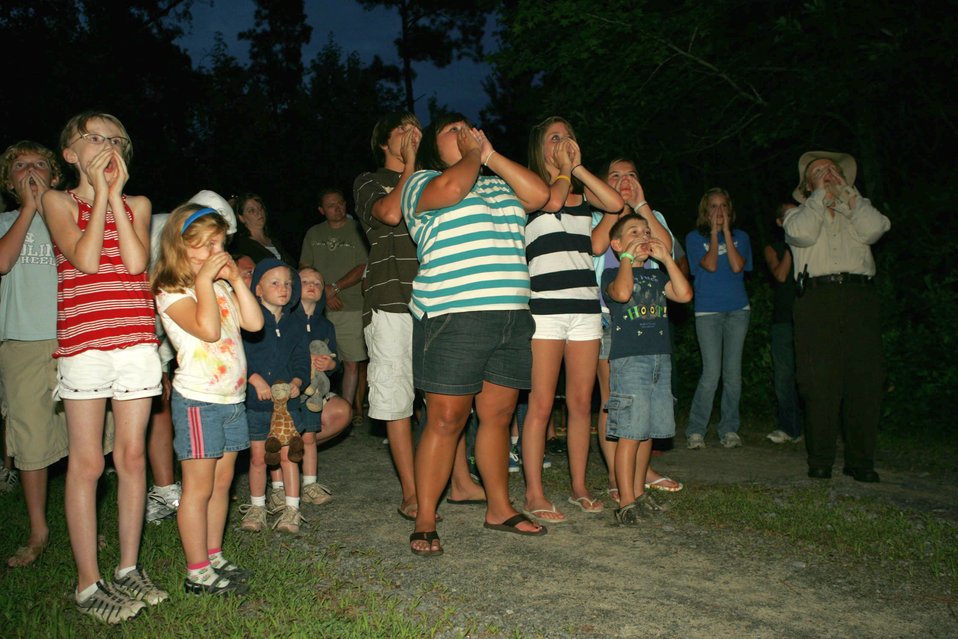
Wolf howl

Visitors howl with endangered red wolves at Alligator River National Wildlife Refuge, NC.